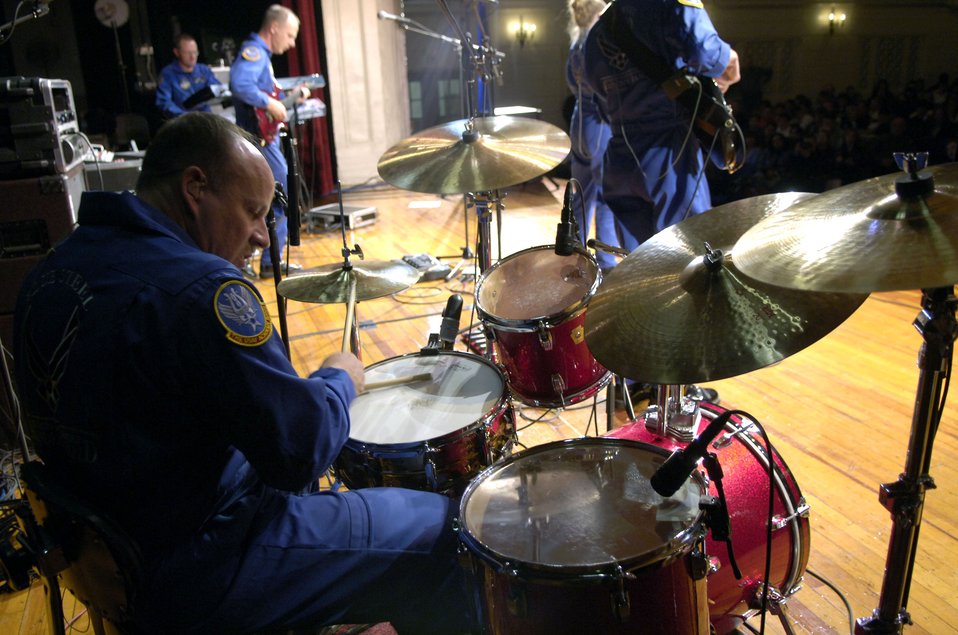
Academy Band

Senior Master Sgt. Scott Barbier plays the drums during a concert for students at Mamaroneck High School in New York, Nov. 22. Sergeant Barbier is part of the U.S. Air Force Academy Band, Blue Steel, which performed at the school in celebration of the Air Force's 60th Anniversary. The band will also perform in the Macy's Thanksgiving Day Parade.